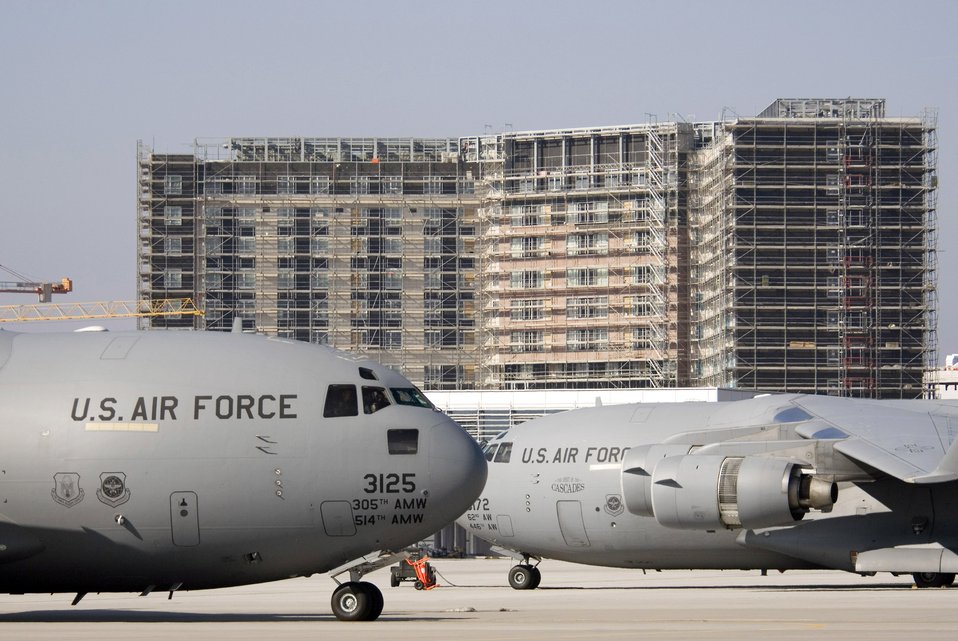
Transformation at Ramstein

Two C-17 Globemaster IIIs taxi on the busy new ramp while construction of the new hotel continues at Ramstein Air Base, Germany, on Sunday, March 19, 2006. The 350-room billeting is slated to open in September as part of the Kaiserslautern Military Community Center.